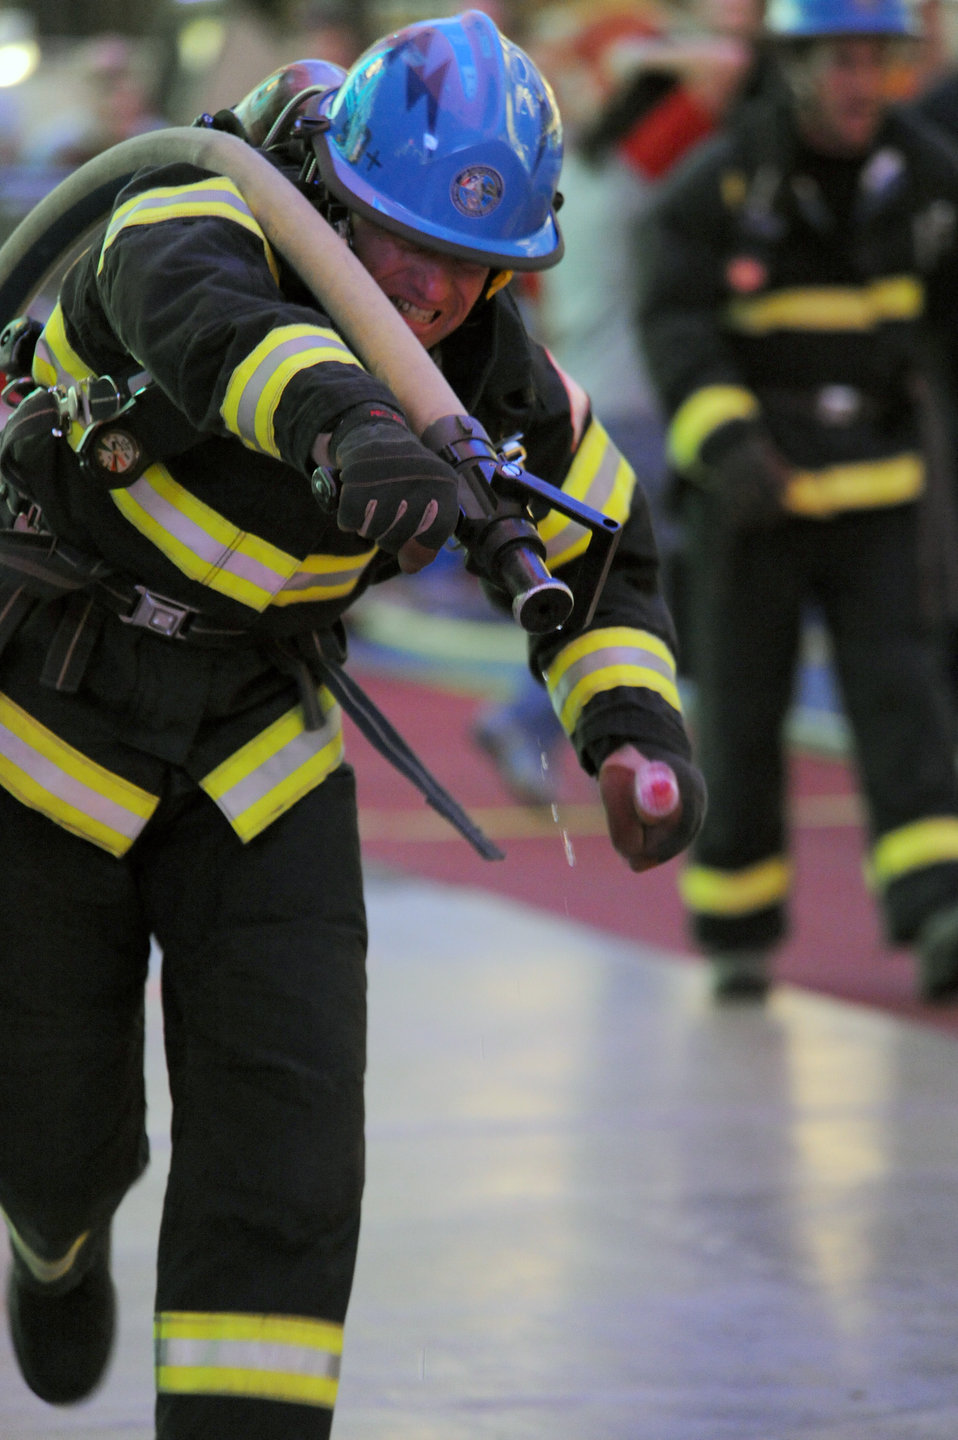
AFA Firefighters

Ron Prettyman pulls a water hose as he competes in the team relay event Nov. 20, 2009, at the Scott Firefighter Combat Challenge in Las Vegas. Mr. Prettyman is a firefighter at the Air Force Academy in Colorado Springs, Colo.